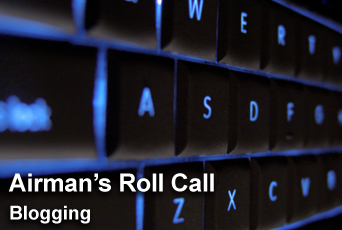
Airman's Roll Call

This week's Airman's Roll Call focuses on Airmen's public Web responsibilities to the Air Force, each other and the American public.